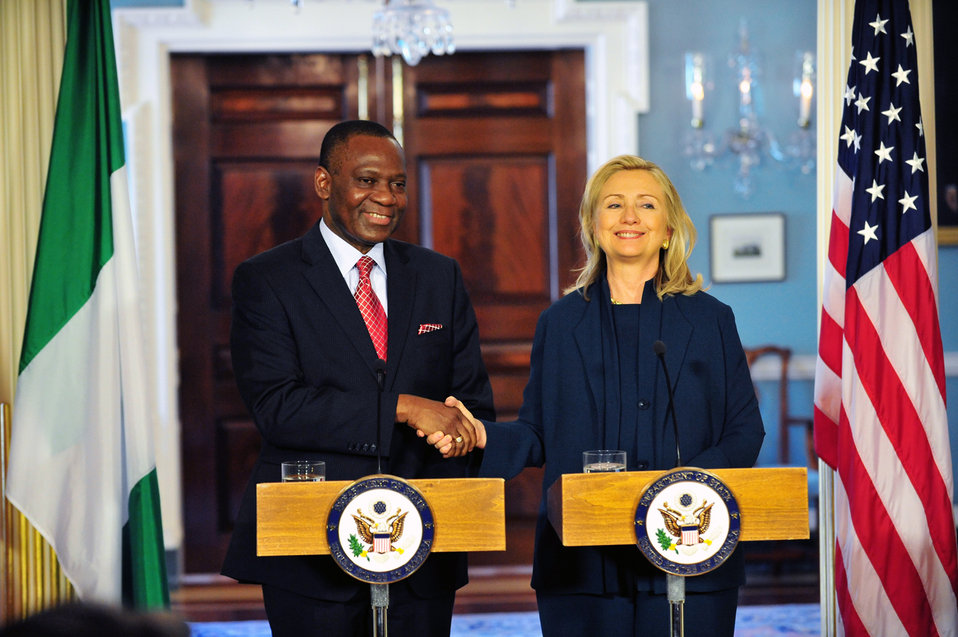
Secretary Clinton Shakes Hands With Nigerian Foreign Minister Ashiru

U.S. Secretary of State Hillary Rodham Clinton shakes hands with Nigerian Foreign Minister Olugbenga Ashiru after their joint press conference at the U.S. Department of State in Washington, D.C., in September 29, 2011.